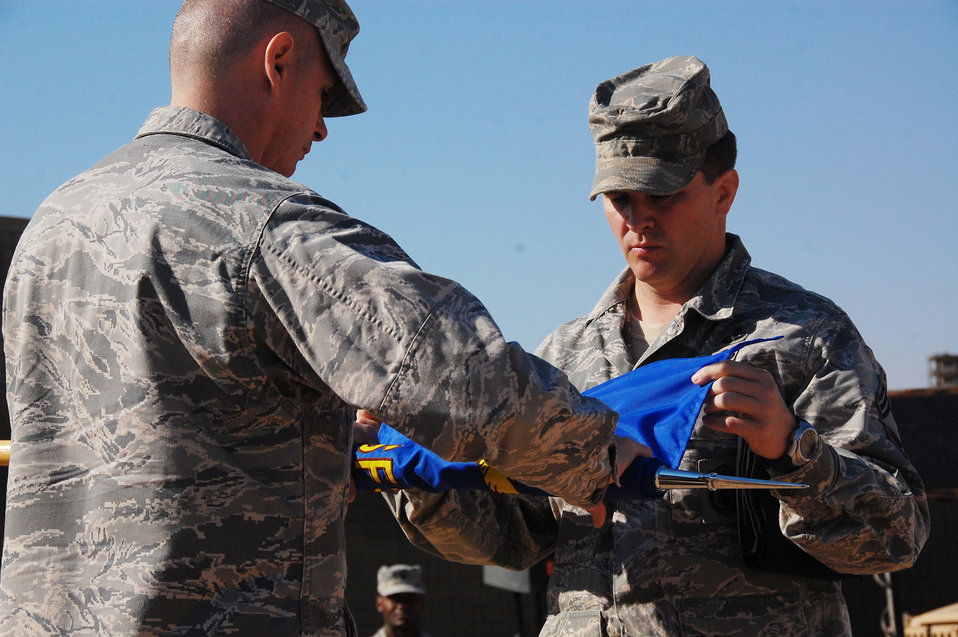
Security forces Airmen end operations at Camp Bucca

Maj. Larry Woodleft and Chief Master Sgt. James Johnson furl the 887th ESFS guidon during the squadron's deactivation ceremony Dec. 3, 2009 at Camp Bucca, Iraq. Major Woodleft is the 887th Expeditionary Security Forces Squadron commander.